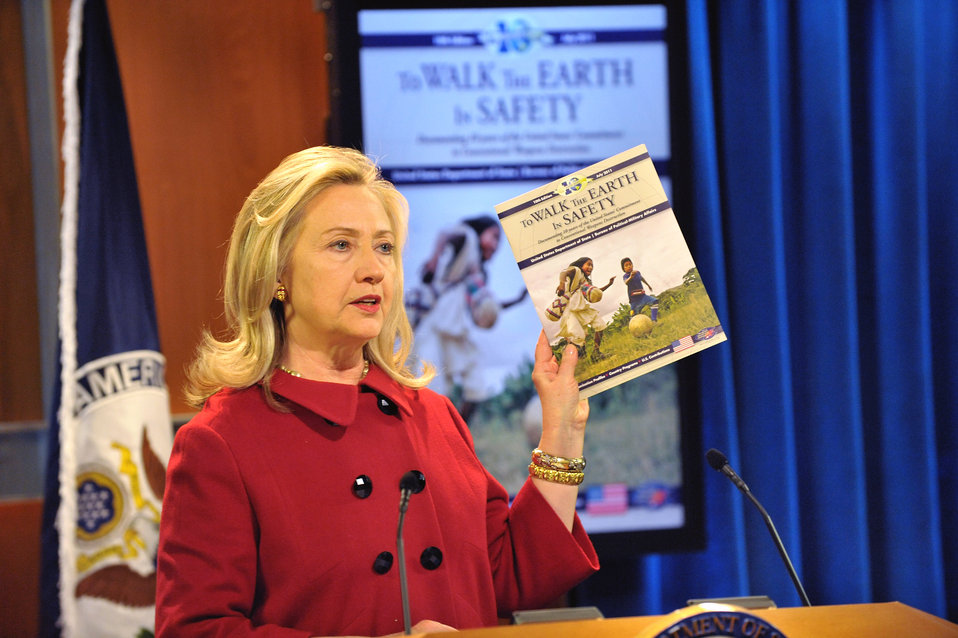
Secretary Clinton Delivers Remarks at Release of 10th Edition of 'To Walk the Earth in Safety' Report

U.S. Secretary of State Hillary Rodham Clinton delivers remarks at the release of the tenth edition of “To Walk the Earth in Safety” report, in the Press Briefing room at the U.S. Department of State in Washington, D.C., on December 19, 2011.